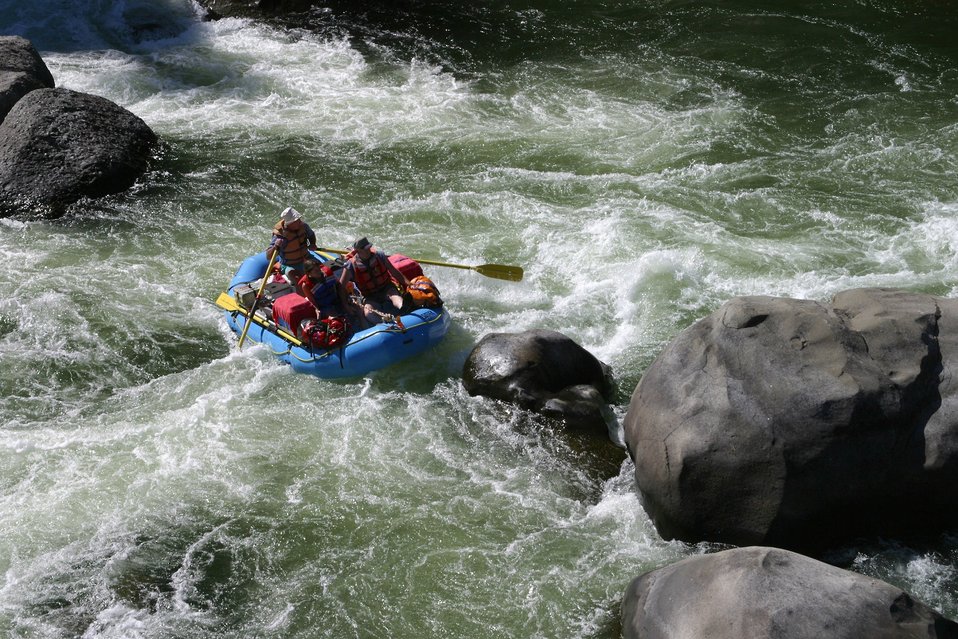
Blossom Rapids.